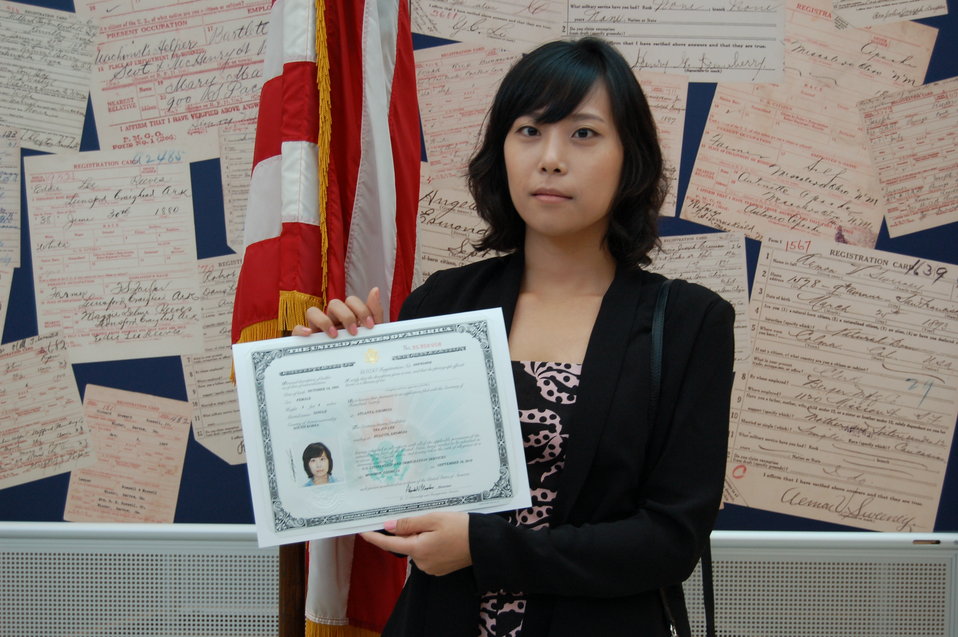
New Citizens